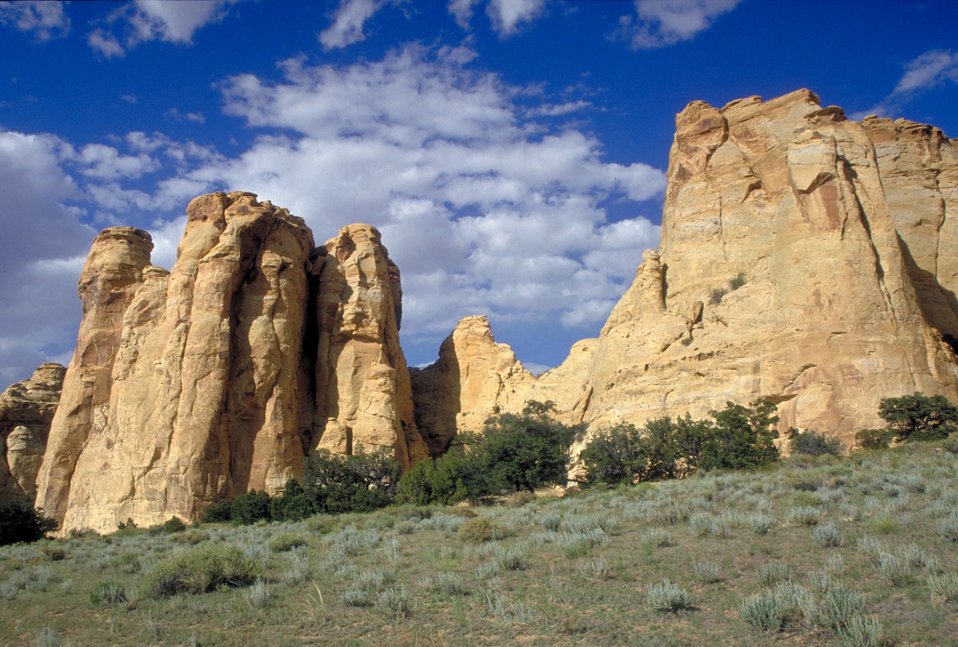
Head of Sinbad, San Rafael Swell